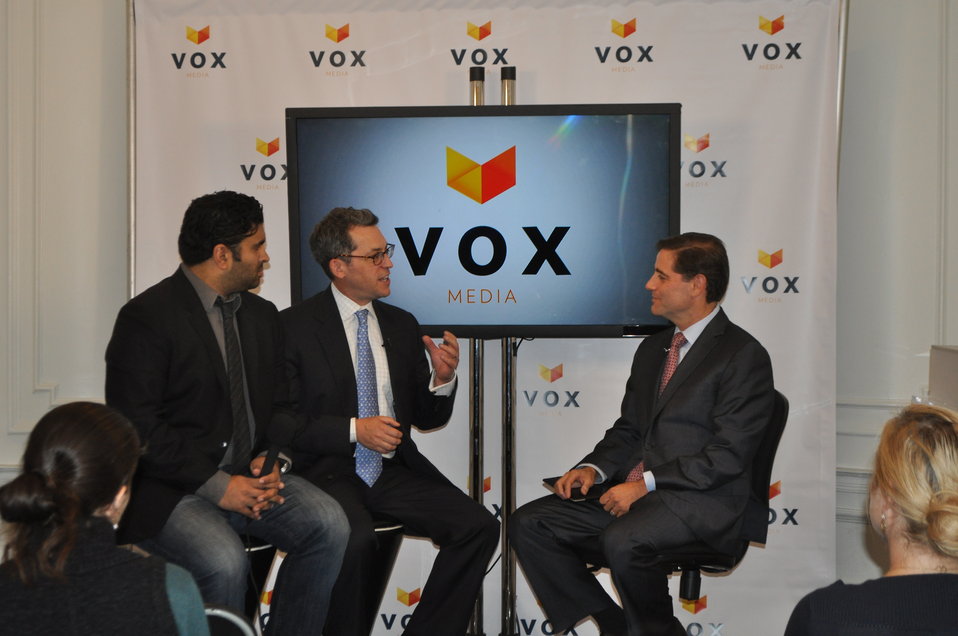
Broadband Challenges and Opportunities, at Vox Media